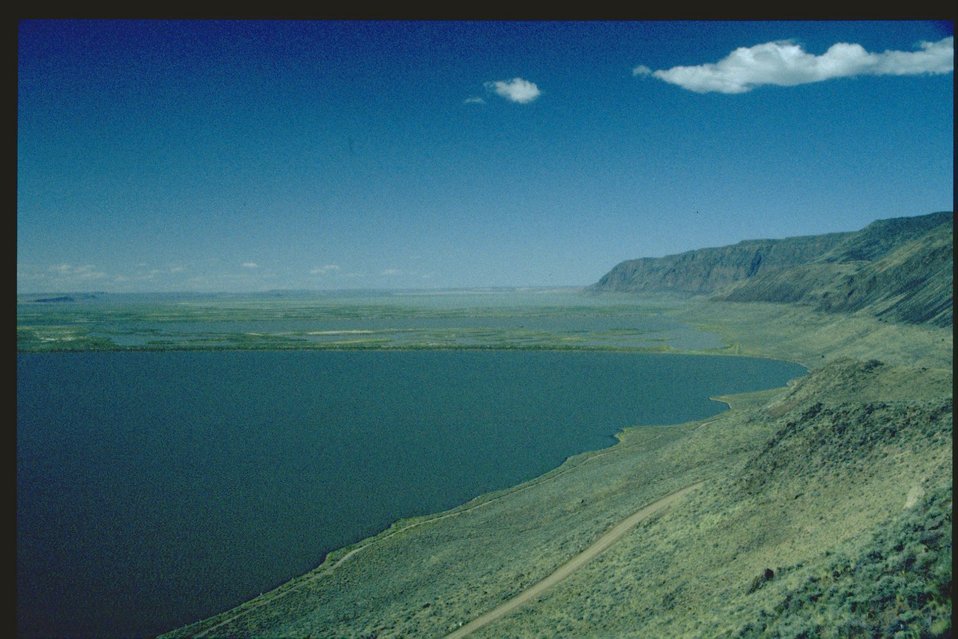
Warner Wetlands.